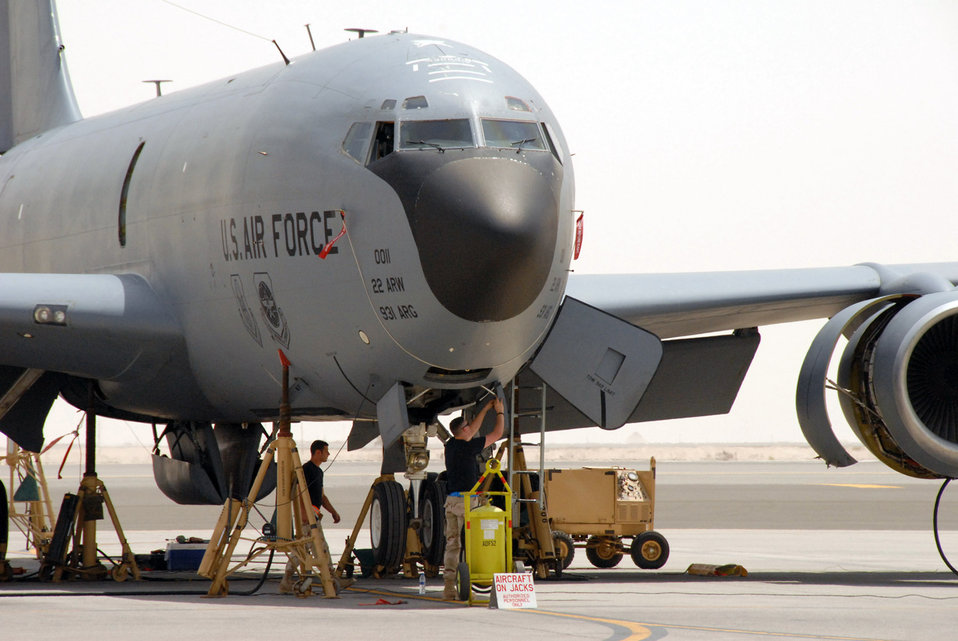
Tanker contract award announced

Two maintainers from the 380th Expeditionary Aircraft Maintenance Squadron prepare for a gear retraction operational check on a KC-135 Stratotanker May 30 at a deployed location in Southwest Asia. Coalition tankers off-loaded about 2.8 million pounds of fuel to more than 220 aircraft May 30.